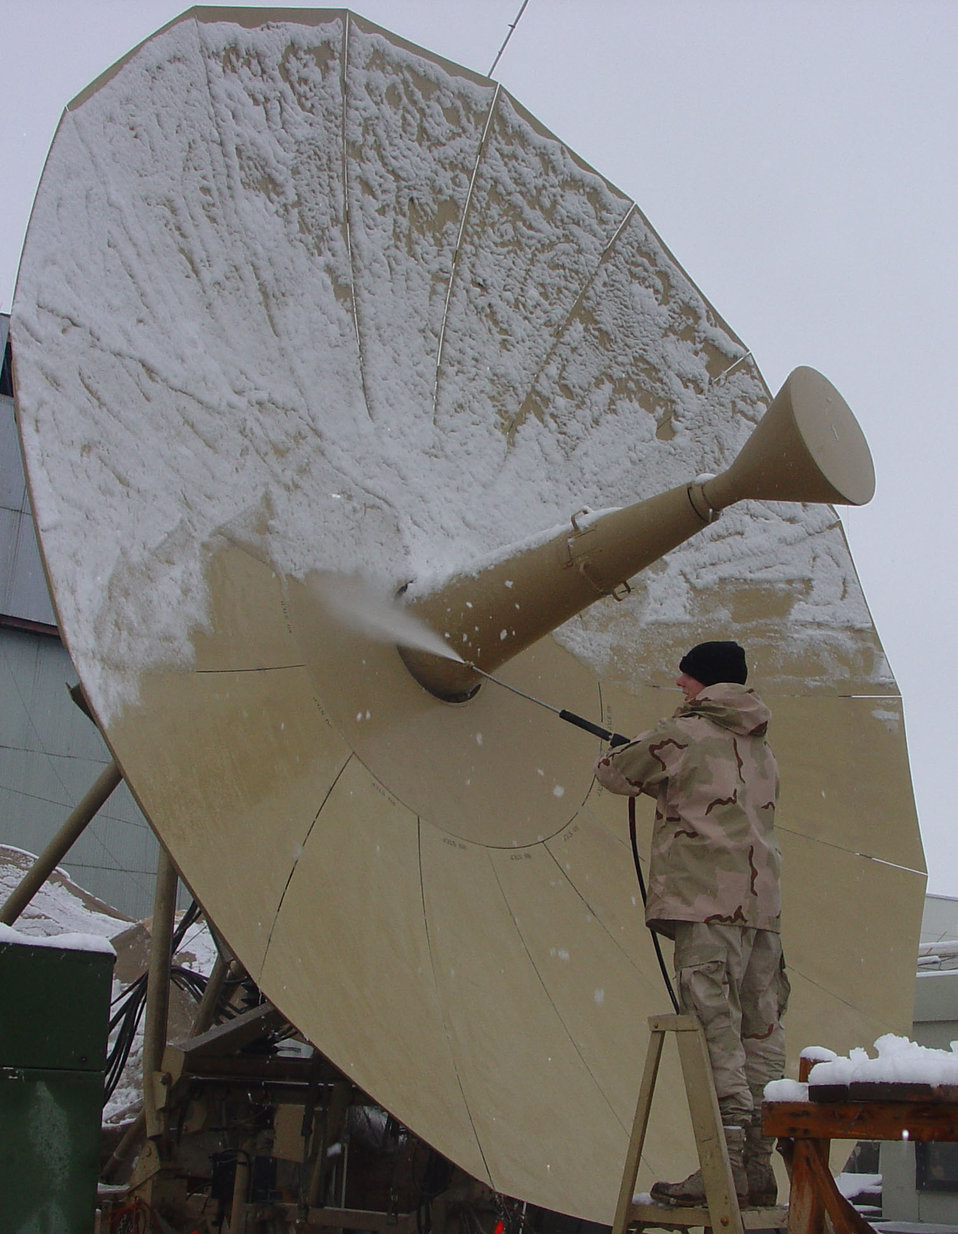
Dish washer

BAGRAM AIR BASE, Afghanistan -- Staff Sgt. Fred Cowell uses a high-pressure washer to remove ice and snow from a satellite dish. The effort returned critical satellite communication signals to normal. Sergeant Cowell is assigned to the 455th Expeditionary Logistics Readiness Squadron's vehicle maintenance branch here.